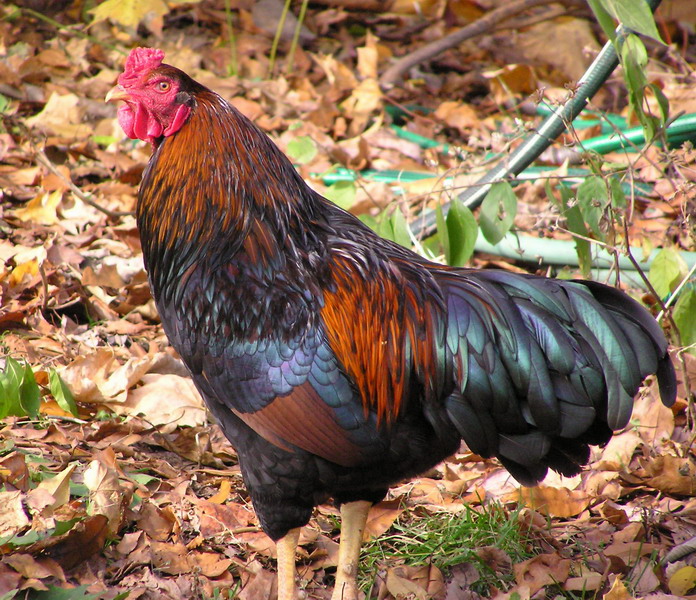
Dark Cornish Rooster owned by Misty Lundberg